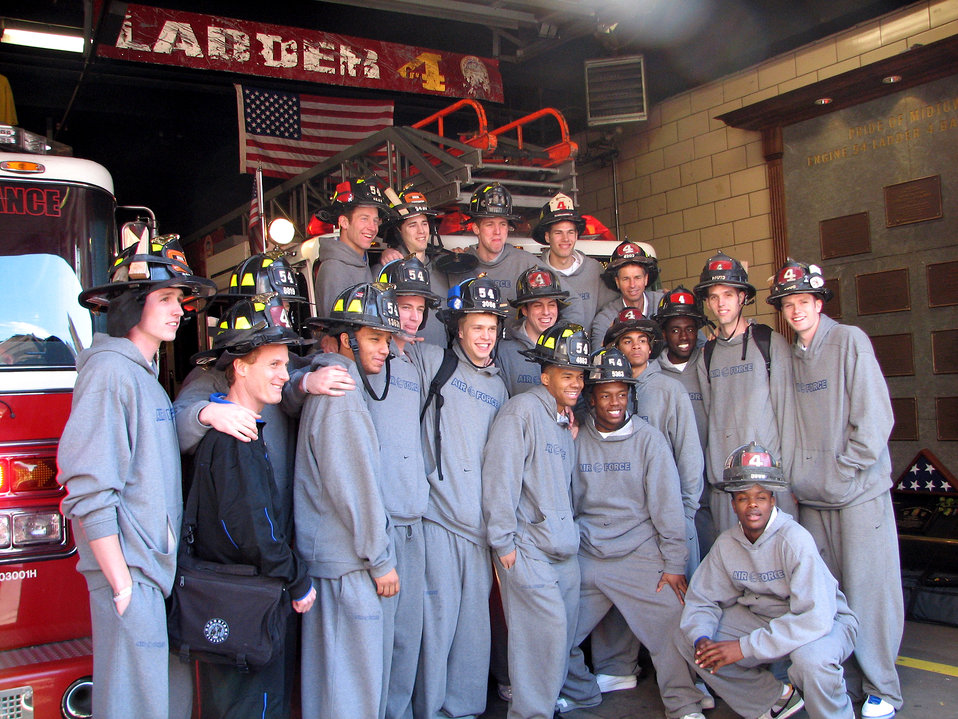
Academy Falcons tour New York

The U.S. Air Force Academy men's basketball team poses for a photo March 25 during a tour of the Engine 54 fire station in New York City. The team is playing in the National Invitation Tournament semifinals March 27 against the Clemson Tigers in Madison Square Garden.